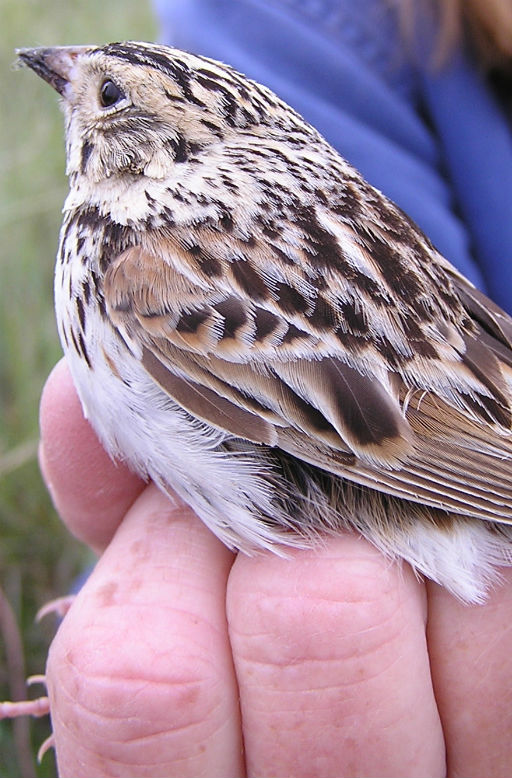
Baird's sparrow on Bowdoin NWR